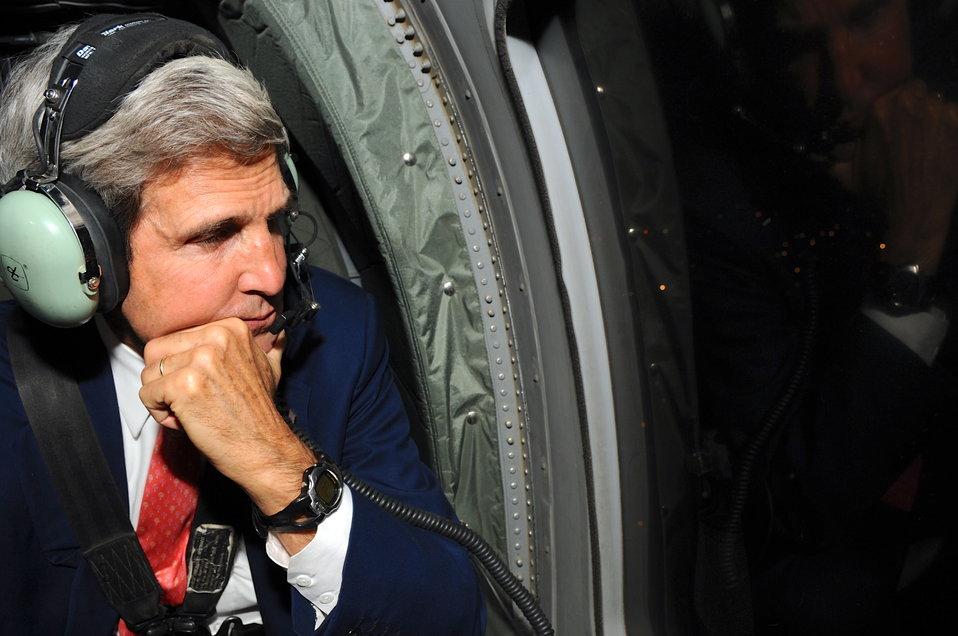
Secretary Kerry Departs Afghanistan

U.S. Secretary of State John Kerry looks out of the window of an Army helicopter as he flies over Kabul following a two-day visit to Afghanistan that ended on October 12, 2013.